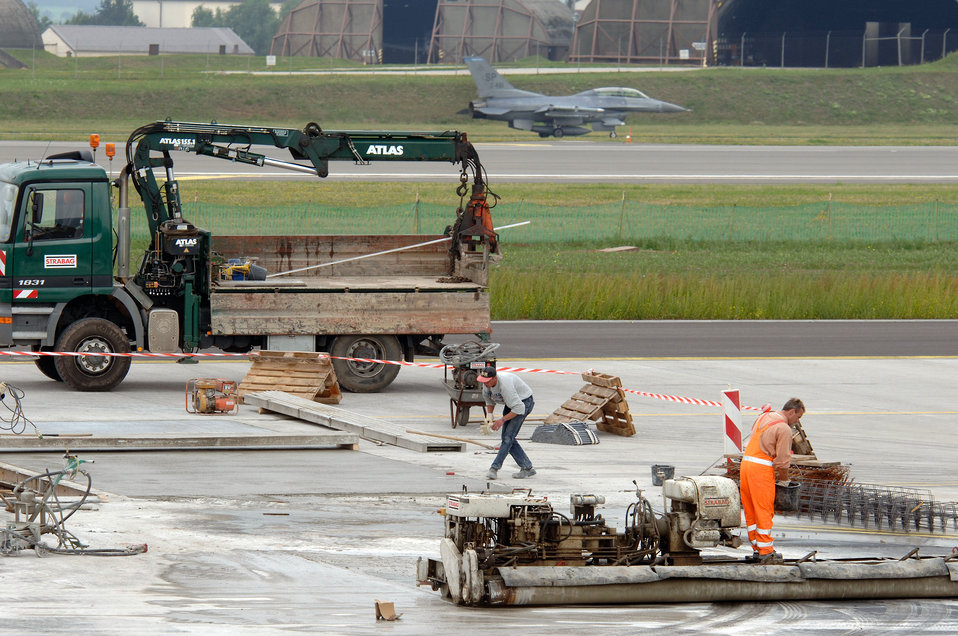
Spangdahlem's new airlift mission has room for expansion

SPANGDAHLEM AIR BASE, Germany -- Construction workers continue to finish the Air Mobility Command parking ramp here as an F-16 Fighting Falcon lands after a training sortie. The multimillion-dollar construction project is part of the Rhein-Main Transition Program. By Oct. 1, the 726th Air Mobility Squadron will set up operations at this fighter base.